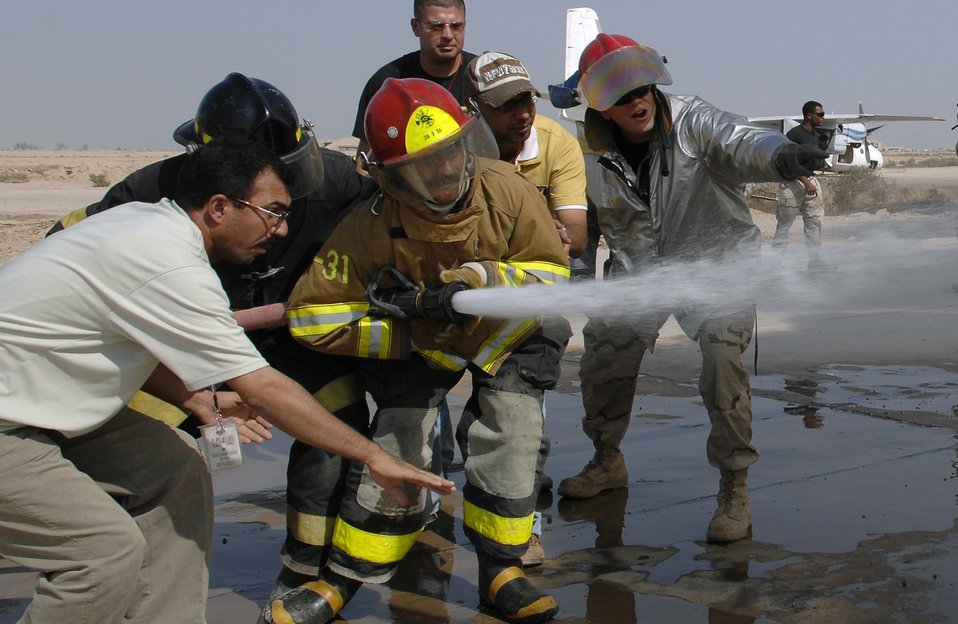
Air Force firefighters teach Iraqis blaze fighting basics

A local Iraqi firefighter operates a hose while Staff Sgt. Joshua Wilson gives advice to effectively knock out a fire during training. The 407th Expeditionary Civil Engineer Squadron firefighters conduct a live-fire training exercise for the Iraqi firefighters teaching basic skills of advancing a hand line, procedures on approaching hazardous environments and performing search and rescue. Sergeant Wilson is deployed from Kadena Air Base, Japan.